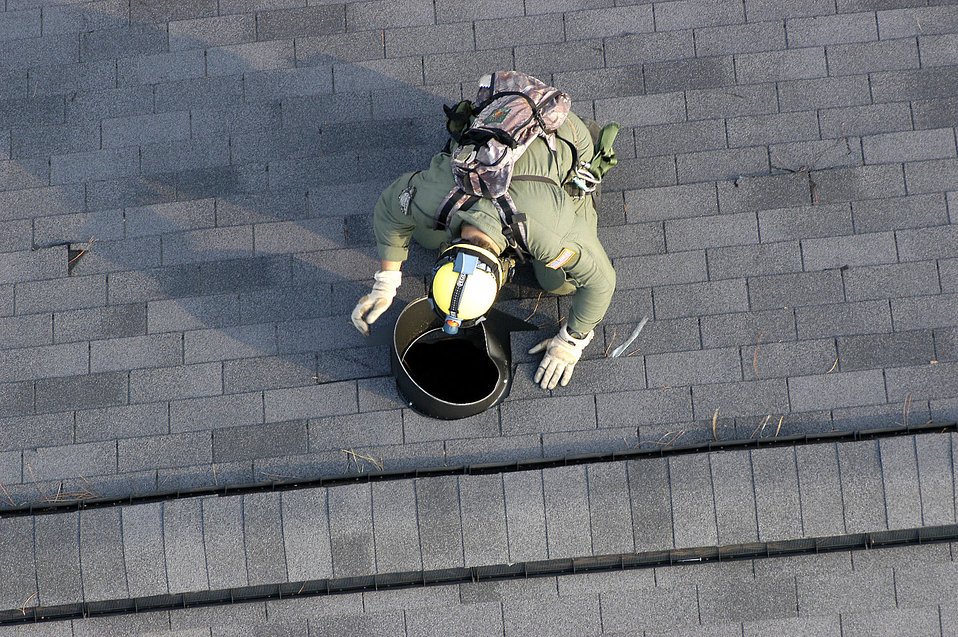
Rescue teams use cyber tools

NEW ORLEANS -- Tech. Sgt. Paul Schultz shouts down an airshaft on a flooded house as he checks out a lead that there may still be people trapped inside. He is a reservist with the 306th Rescue Squadron from Davis-Monthan Air Force Base, Ariz.